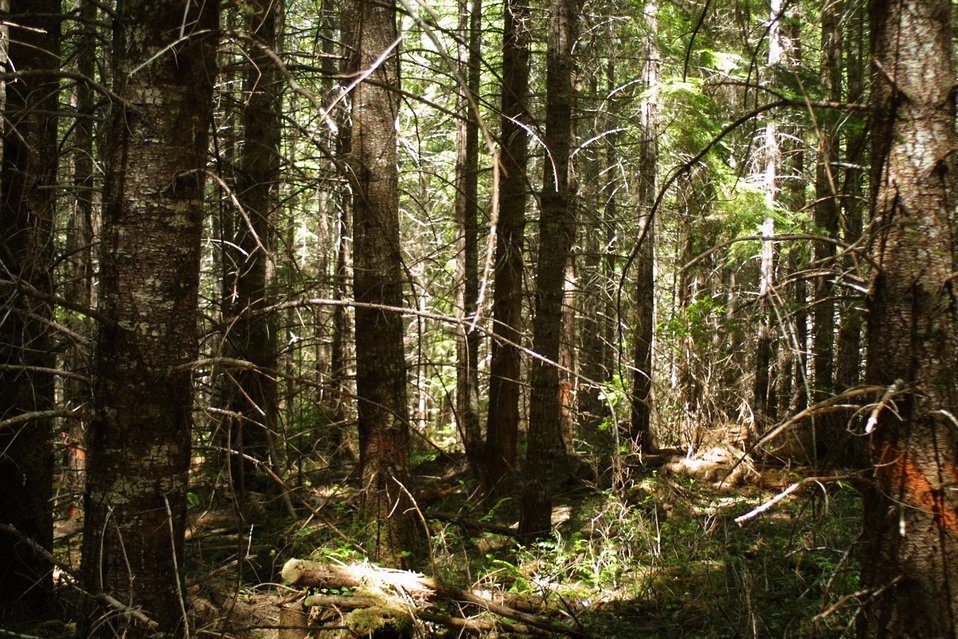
Camas East Timber Sale in Late Successional Reserve.